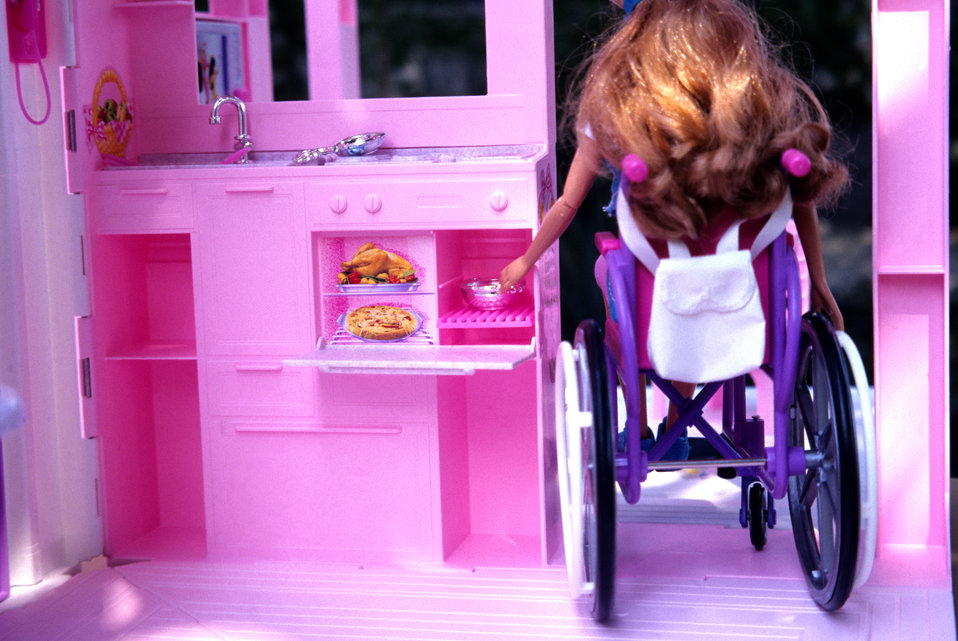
This was one of three images (PHIL# 9135 - 9137) depicting an attempt by a toy manufacturer to produce a toy character, which displayed characteristics that emulated those of a mobility-challenged person who was a wheelchair user. This disabled character was portrayed in the manner that echoed the style of the rest of their toy line. In doing so, the manufacturer tried to, in a sense, mainstream the knowledge of what is faced by the disabled in the real world through play, and therefore, was as educational, as it was entertaining to the childhood demographic group. PHIL image 9137, showed Ron Mace looking through a door in the playhouse. Mr. Mace was a principle of Barrier Free Environments, Inc. (BFE), and a co-founder of the Center for Universal Design (CUD). He developed the concept of universal design in the mid-1980's, and died in 1998.